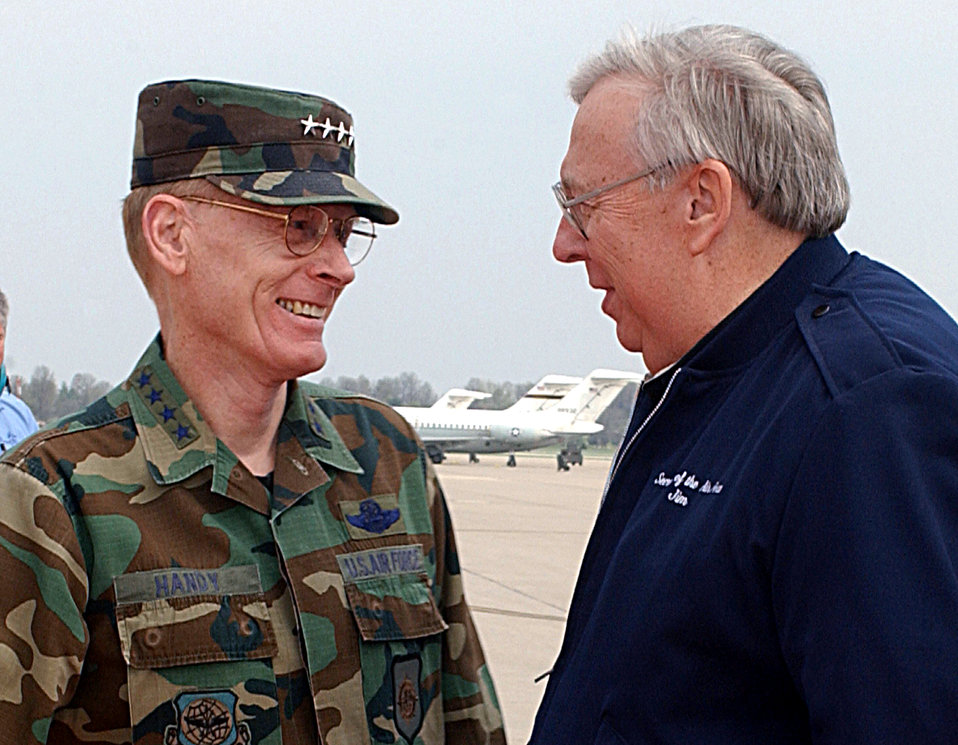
Roche and Handy

SCOTT AIR FORCE BASE, Ill. -- Gen. John Handy, Commander, U.S. Transportation Command, and Commander, Air Mobility Command, greets Dr. James G. Roche, Secretary of the Air Force, on the flightline April 4. While here, Roche visited with AMC active duty, Guard and Reserve commanders.